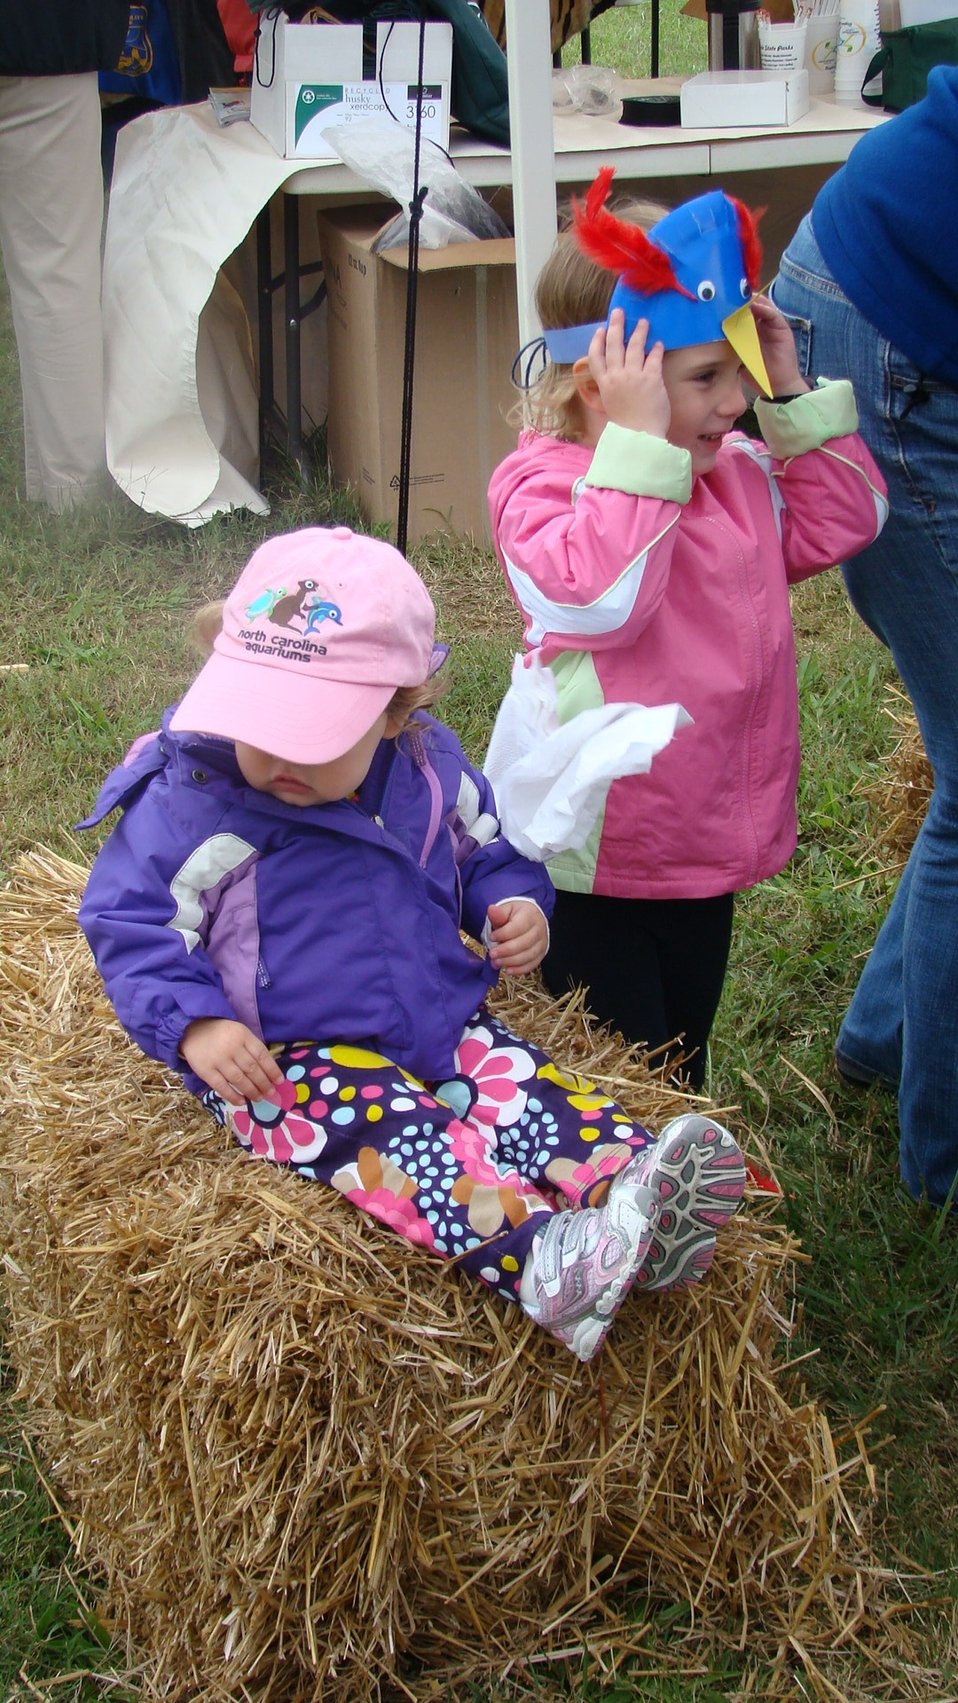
Rappahannock River Valley NWR 15th Anniversary

Young visitors making bird hats at the 'Go Wild!' celebration.